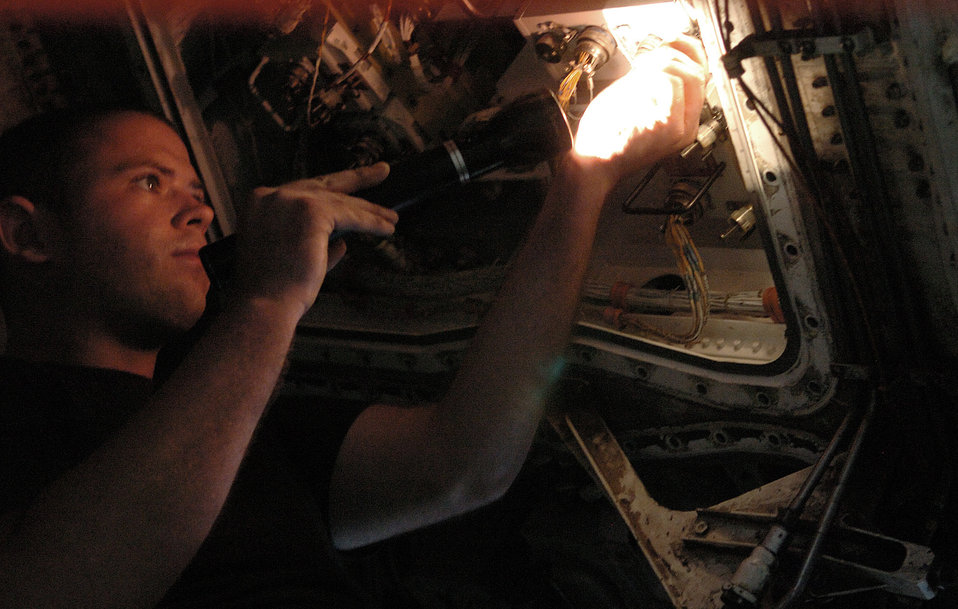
'Bone' makes evolving mark on war on terrorism

Airman 1st Class Nicholas Sharpe performs a preventative maintenance inspection Sept. 13 on a B-1 Lancer at Dyess Air Force Base, Texas. An inspection on the bomber is required after every 600 hours of flying time. Airman Sharpe is with the 9th Bomb Squadron.